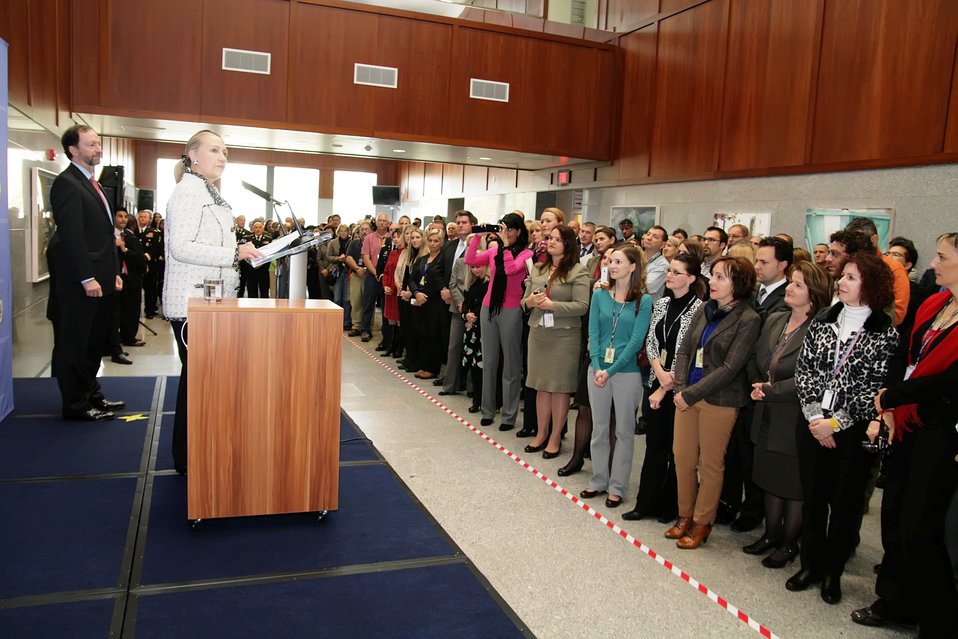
Secretary Clinton Addresses the Staff and Families of Embassy Sarajevo

U.S. Secretary of State Hillary Rodham Clinton, with U.S. Ambassador to Bosnia and Herzegovina Patrick Moon, meets with the staff and families of Embassy Sarajevo, in Sarajevo, Bosnia and Herzegovina, October 30, 2012.